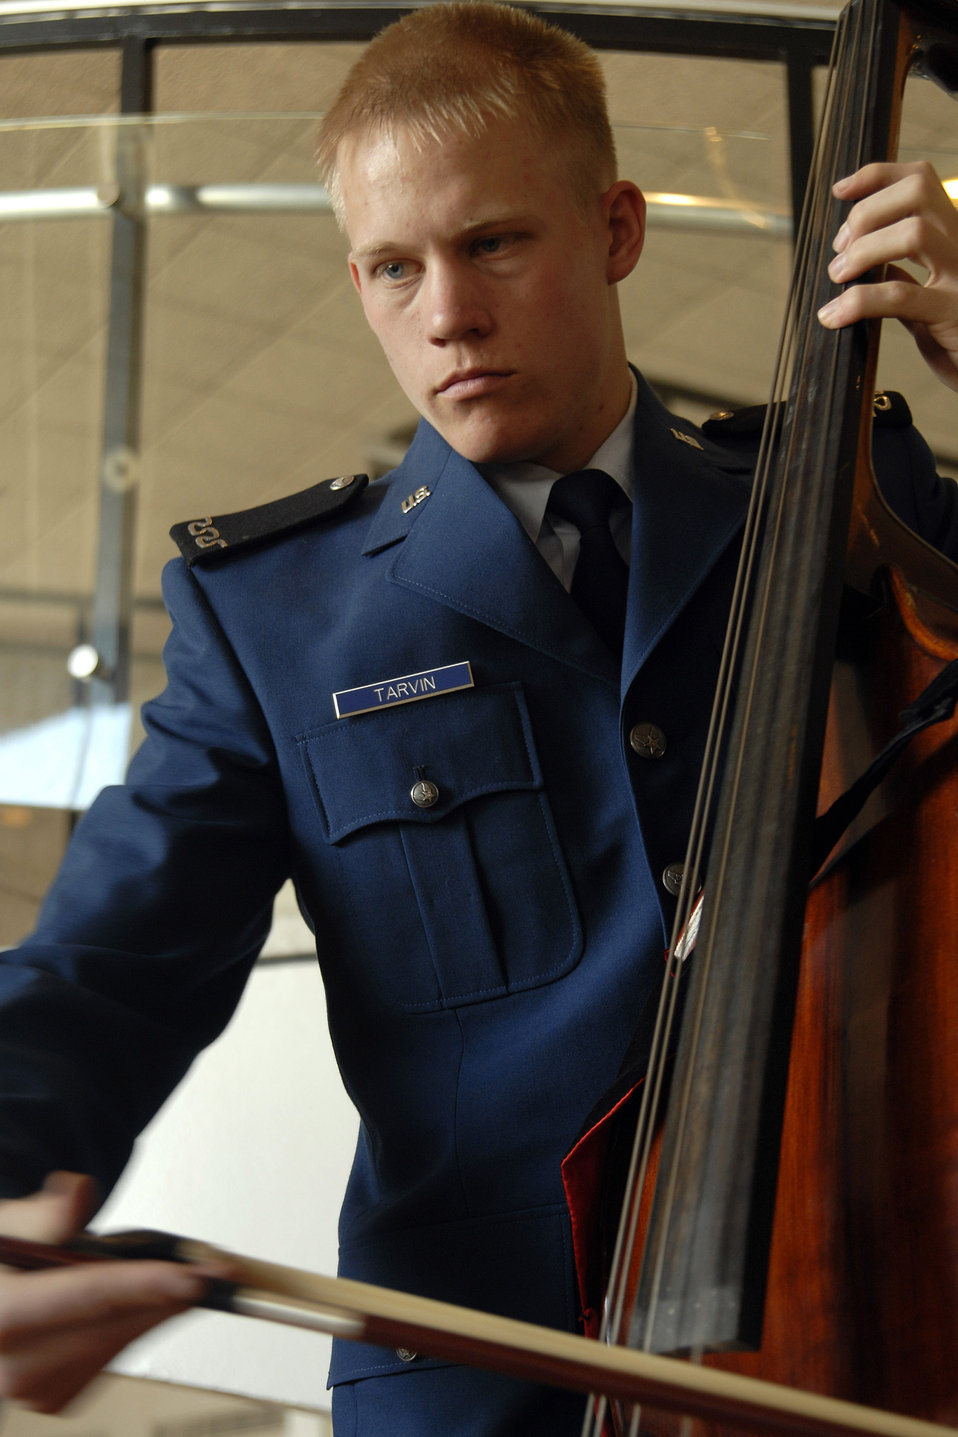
Academy salutes founders

Freshman Peter Tarvin plays the bass during the cadet sponsor social held April 5 in Arnold Hall at the U.S. Air Force Academy in Colorado. The social honored the 3,500 cadet sponsors; those men, women and families who open their hearts and homes to members of the cadet wing to enhance cadet life and develop officers of character. Cadet Tarvin is a member of the Cadet Orchestra.